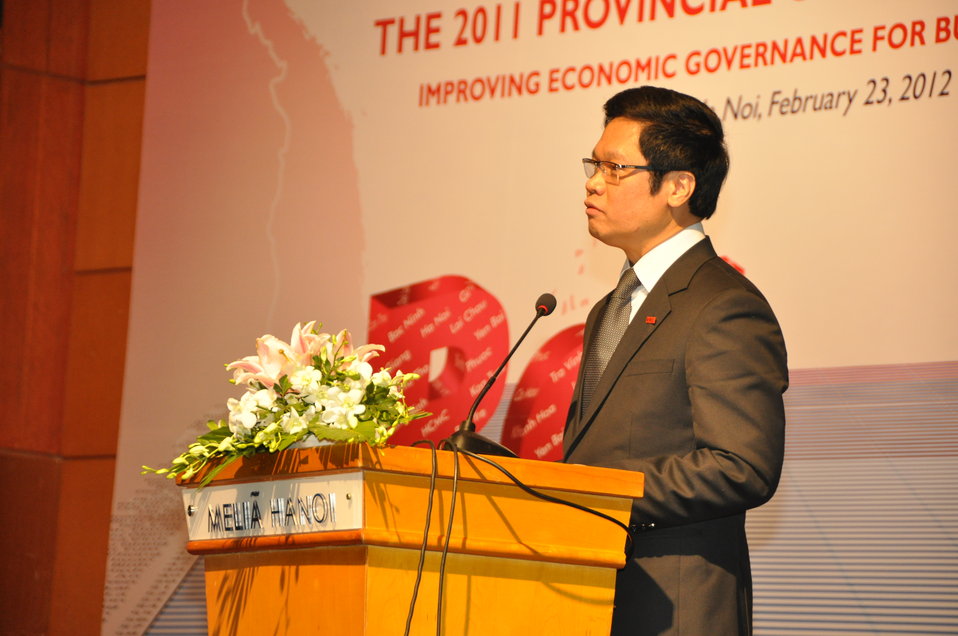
20120223PCI11 Launch Hanoi RNyberg 6441